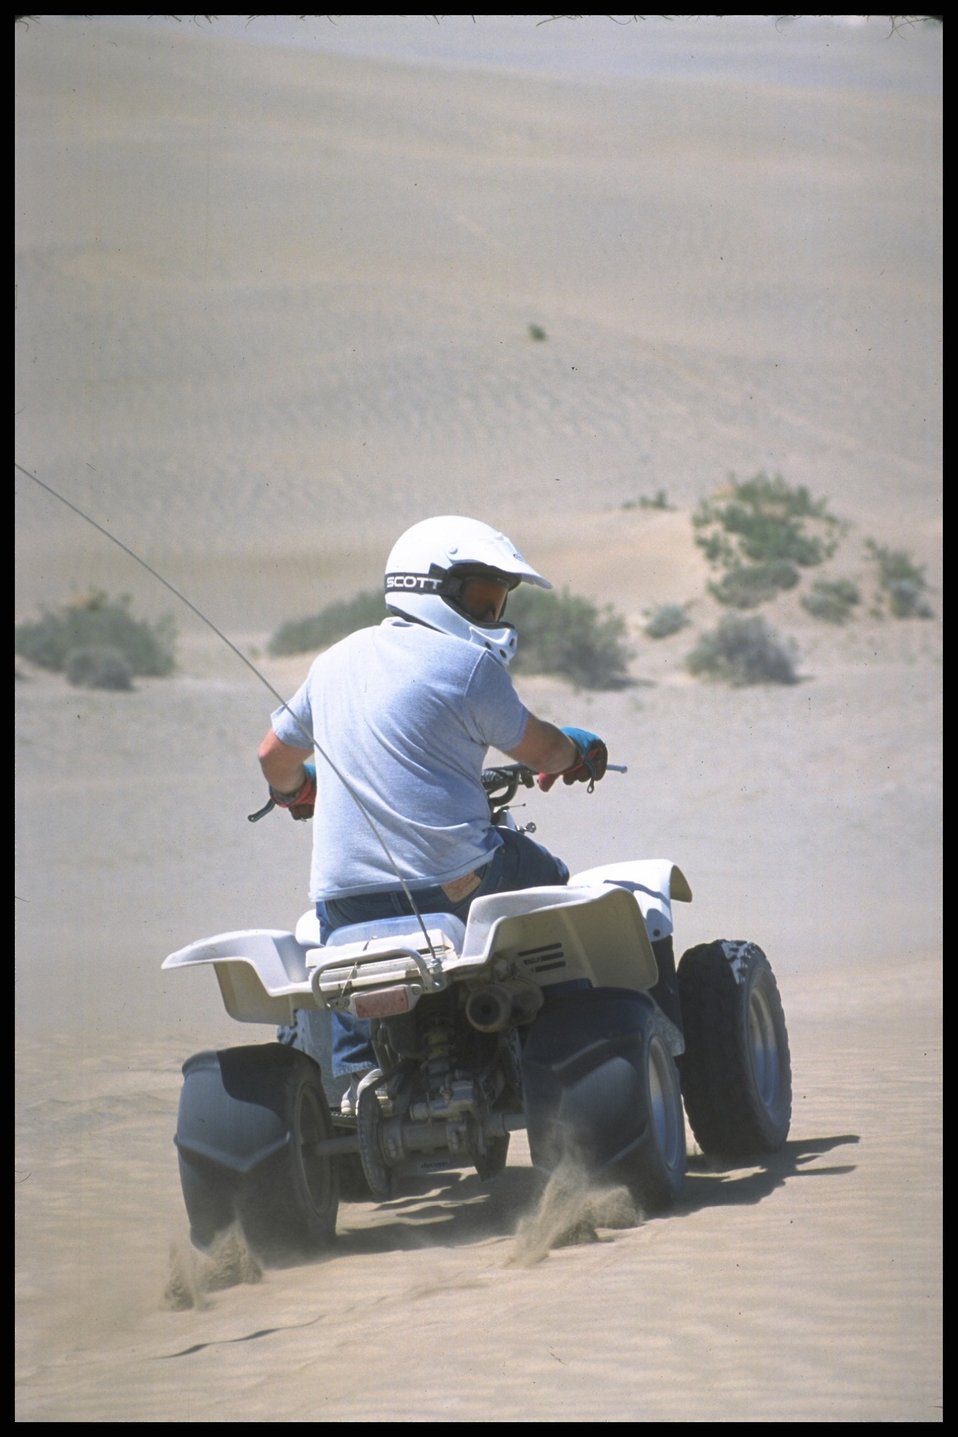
ATV in Sand Dunes, Christmas Valley, Lakeview District.